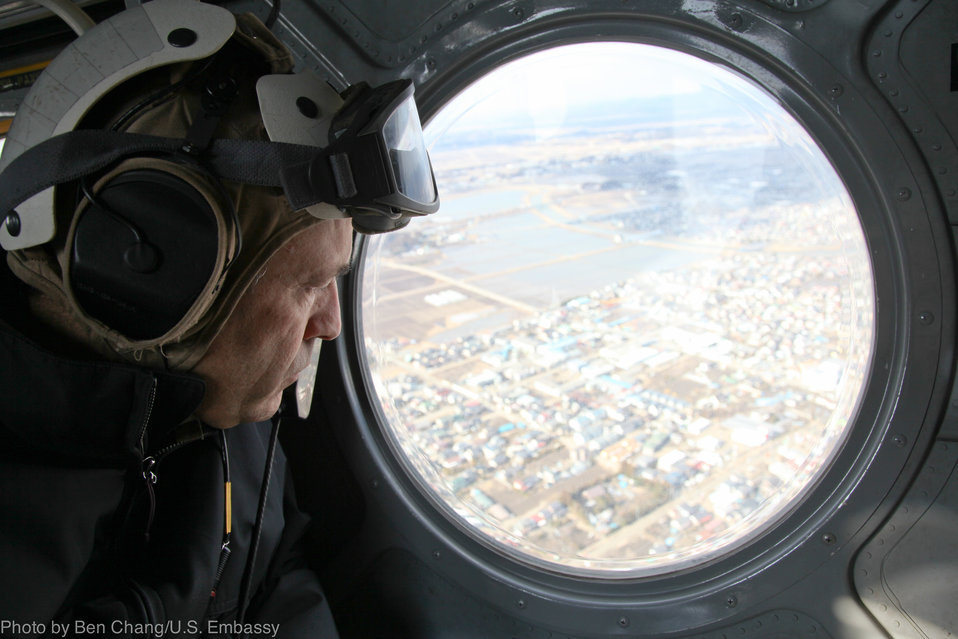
Ambassador Roos Views Tsunami-Hit Areas

U.S. Ambassador to Japan John Roos views tsunami-hit areas from a helicopter over the coast of Japan on March 23, 2011.